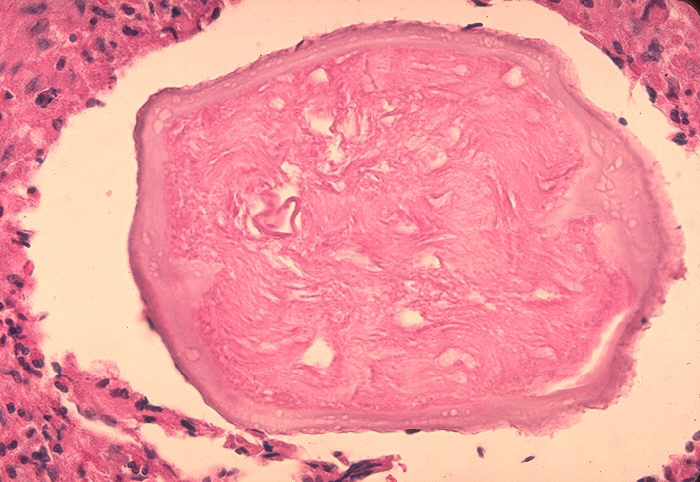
Histopathology showing cross section of Dirofilaria worm in eye.